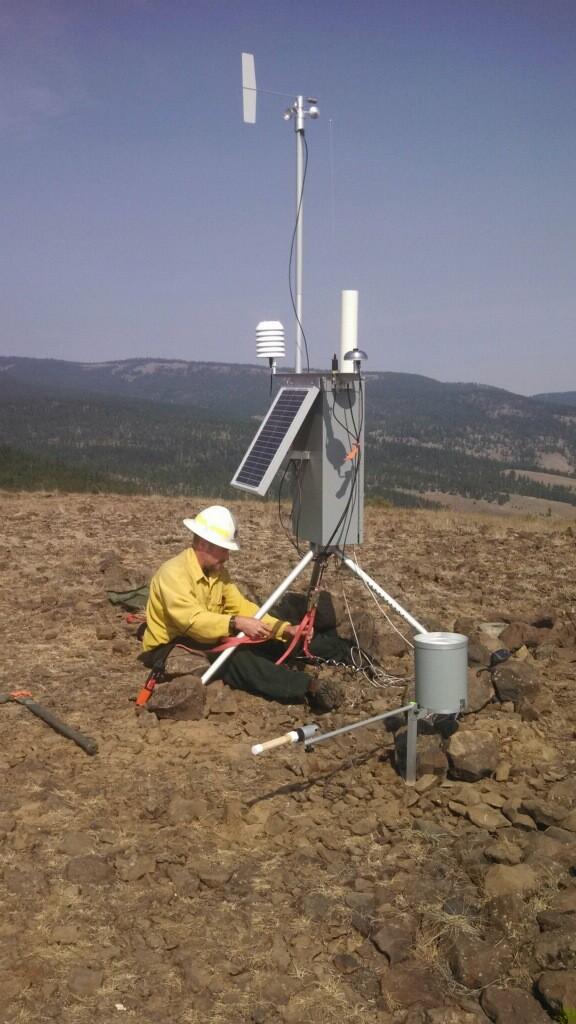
A firefighter sets up a Remote Automated Weather Station (RAWS) to monitor wind and weather conditions that will affect the Colockum Tarps Fire. The Colockum Tarps Fire southwest of Malaga, WA began on Jul. 27, 2013 is under investigation. The fire has consumed approximately 84,400 acres and is approximately 60% contained.